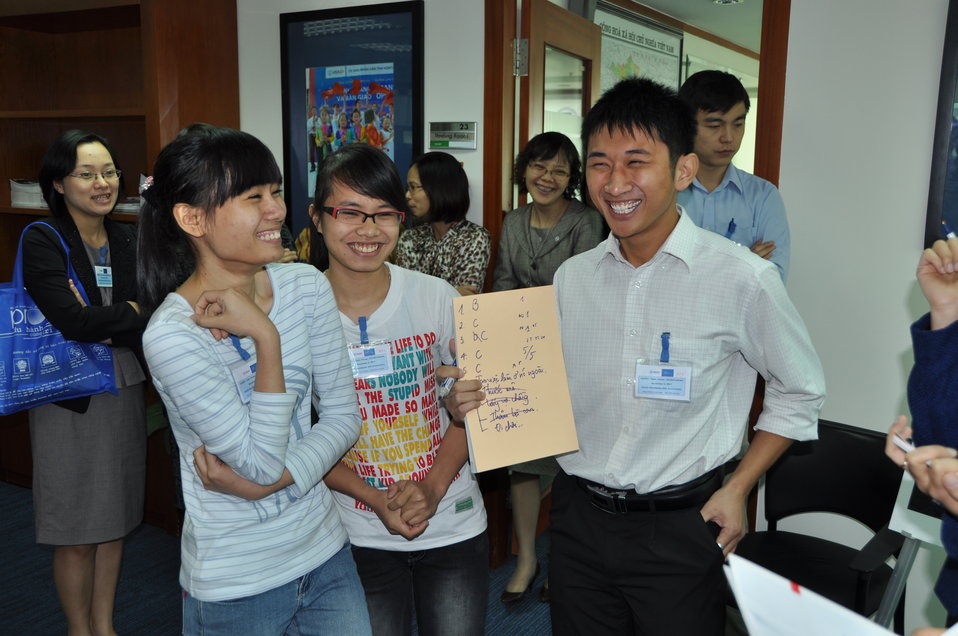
USAID 50th Anniversary Open House, USAID Vietnam